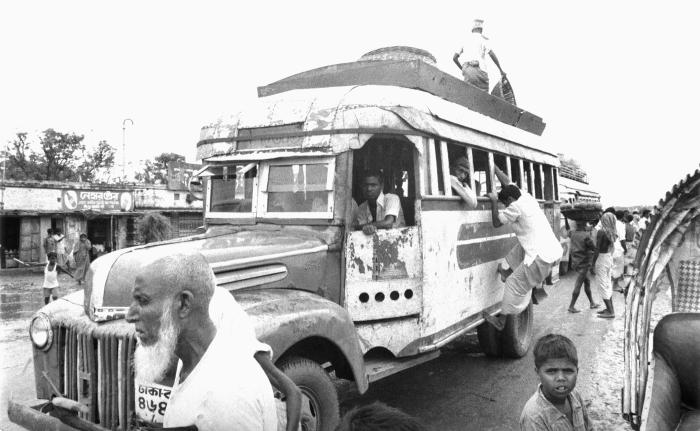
This bus was transporting Bangladesh residents from between towns. From time to time, buses were used by smallpox eradication team members as a possible mode of transportation. This image was part of a series provided by Dr. Stan Foster, and captured by Pierre Claquin, M.D., B.A.C., who at the time was a member of the World Health Organization's Smallpox Eradication Program. It was part of a series photographed by former E.I.S. officer, Stanley O. Foster M.D., M.P.H., and was one of a series entitled 'The Story of One Smallpox Jeep', which depicted the travails faced by the jeep, and its occupants of public health practitioners, as they road through the Bangladesh countryside in an attempt to eradicate smallpox from the country.